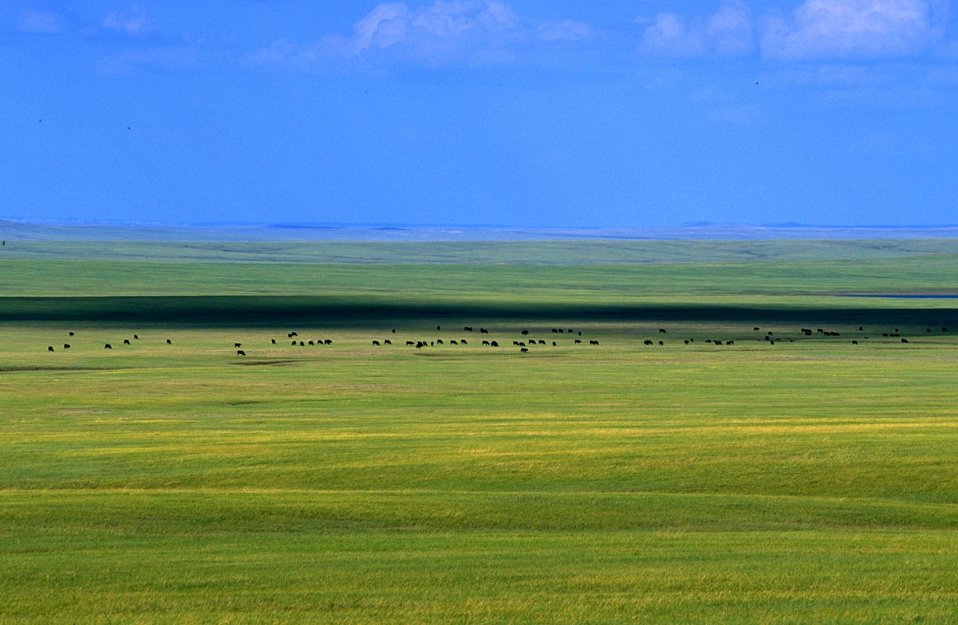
Cattle grazing on grassland 35 miles north of Belle Fourche